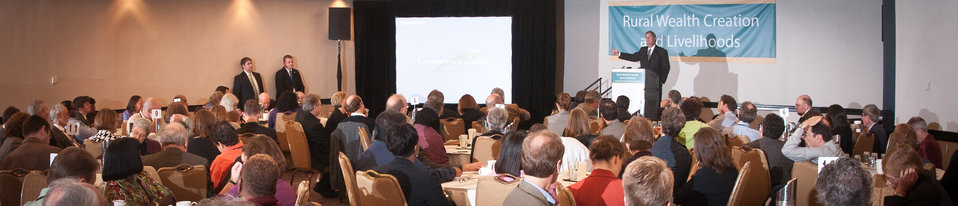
U.S. Department of Agriculture (USDA) Secretary Tom Vilsack responded to several questions following his keynote address to the Rural Wealth Creation and Livelihoods national conference for practitioners, researchers and policymakers, held at the Dupont Hotel, Washington DC, on Monday October 3, 2011. USDA partnered with the Ford Foundation to sponsor the conference.